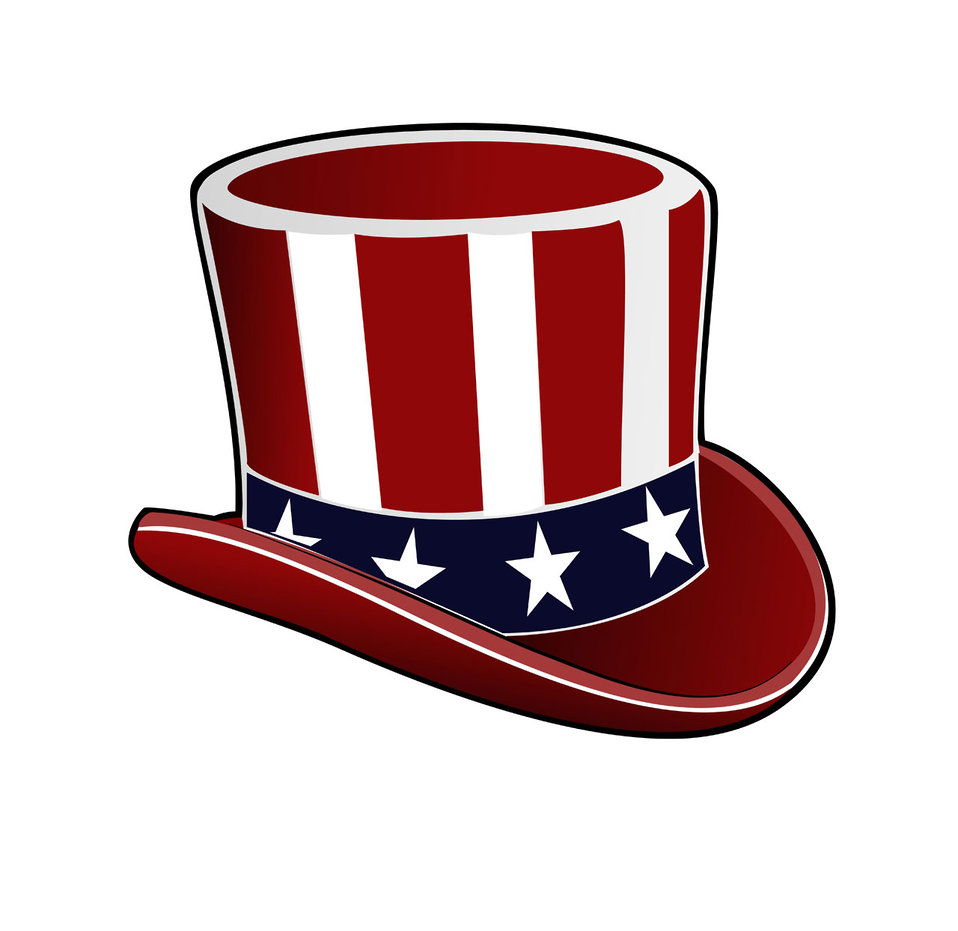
Uncle sam hat - available in vector format at vectorportal.com.